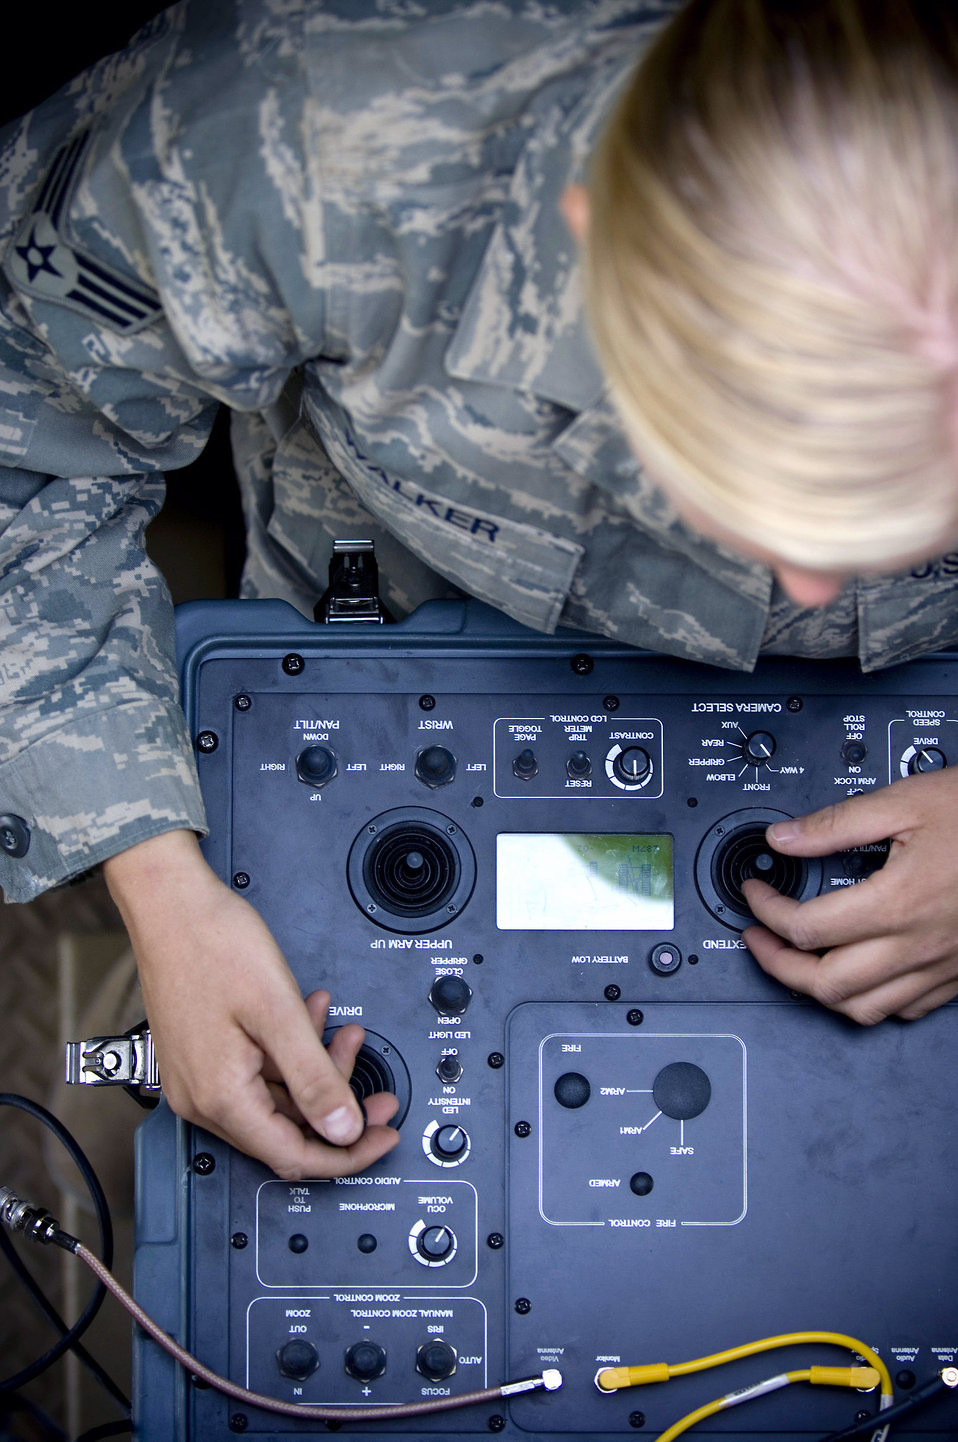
Airmen combat explosive threats in Afghanistan

Senior Airman Emily Walker pilots a Talon explosive ordnance disposal robot from inside a mine-resistant, ambush-protected vehicle Oct. 26 at Kandahar Airfield, Afghanistan. Integrated cameras allow Airman Walker to see objects around the robot, helping her to safely handle most incidents without ever having to leave the MRAP. Airman Walker is assigned to the 755th Air Expeditionary Group Explosive Ordnance Disposal Operation Location-Bravo and deployed from Ramstein Air Base, Germany. She hails from Brownsville, Calif.